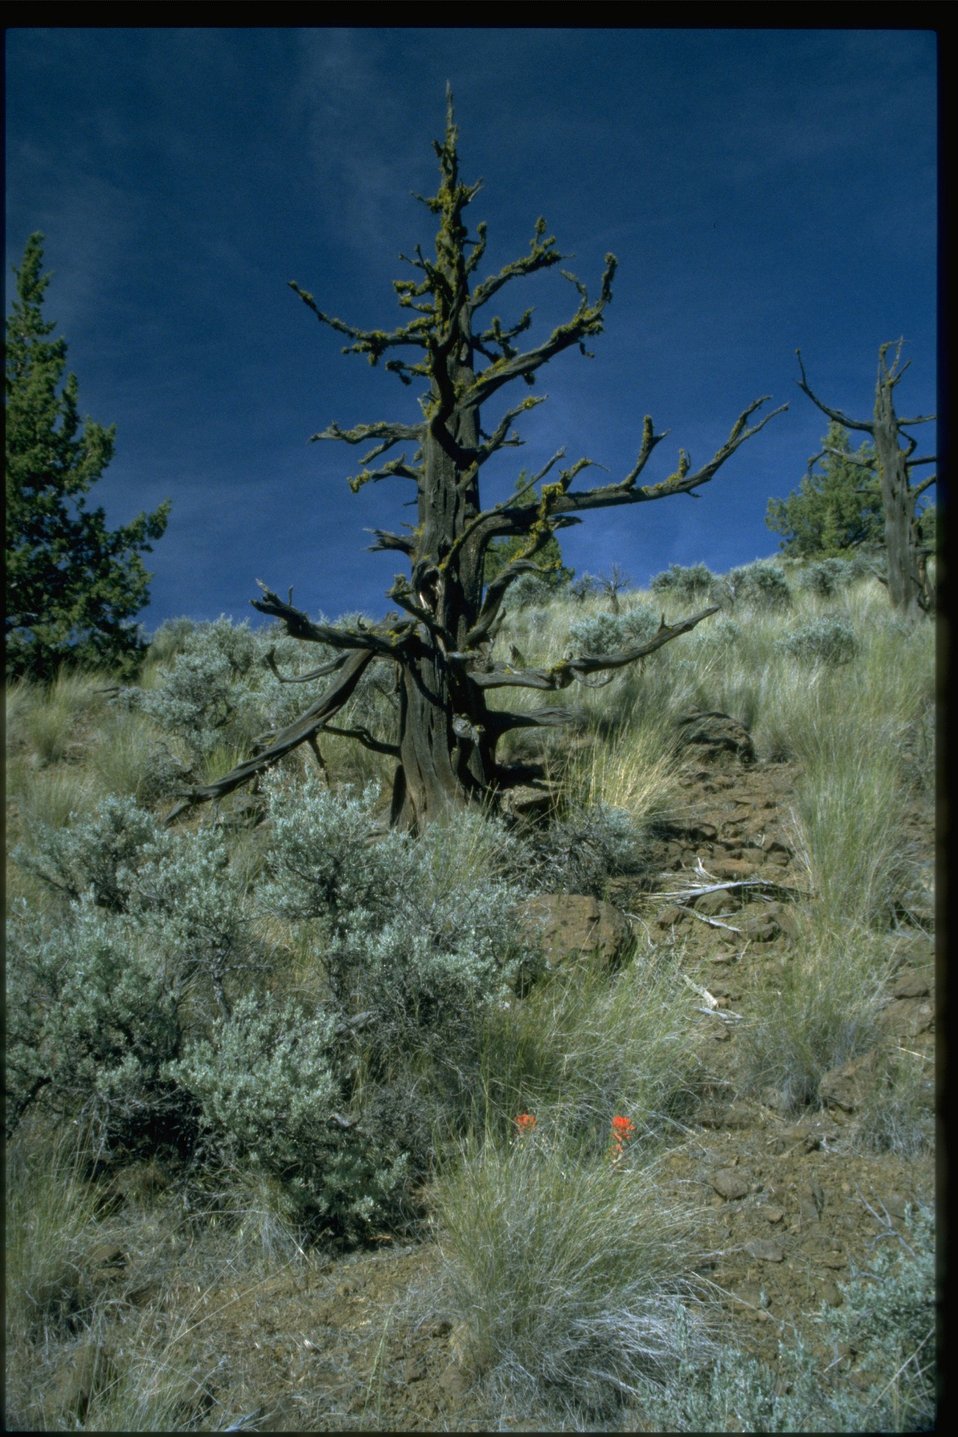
Farshot of weathered Western Juniper (Juniperus Occidentalis) snag.